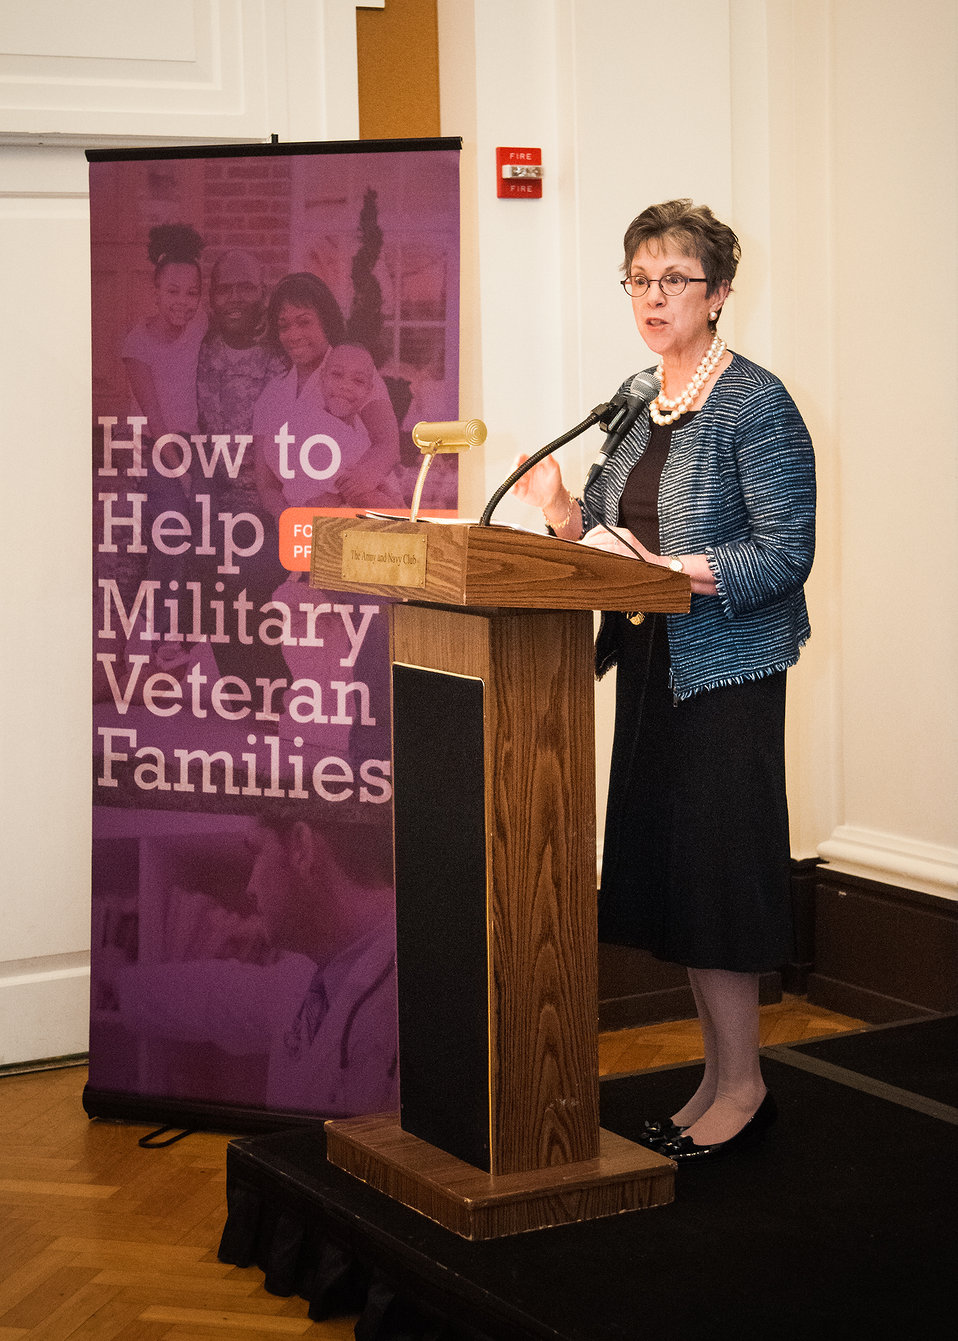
Under Secretary Dr. Catherine Woteki, Research, Education, and Economics and Chief Scientist gave remarks Dr. Jimmy Henning, Associate Dean and Director for University of Kentucky Cooperative Extension gave remarks at the United States Department of Agriculture (USDA) and Department of Defense (DOD) jointly launch event for the 'How to Help Military and Veteran Families' - a series of publications produced jointly by the USDA, National Institute of Food and Agriculture (NIFA) and DOD at the Army-Navy Club in Washington, DC, Monday, April 15, 2013.